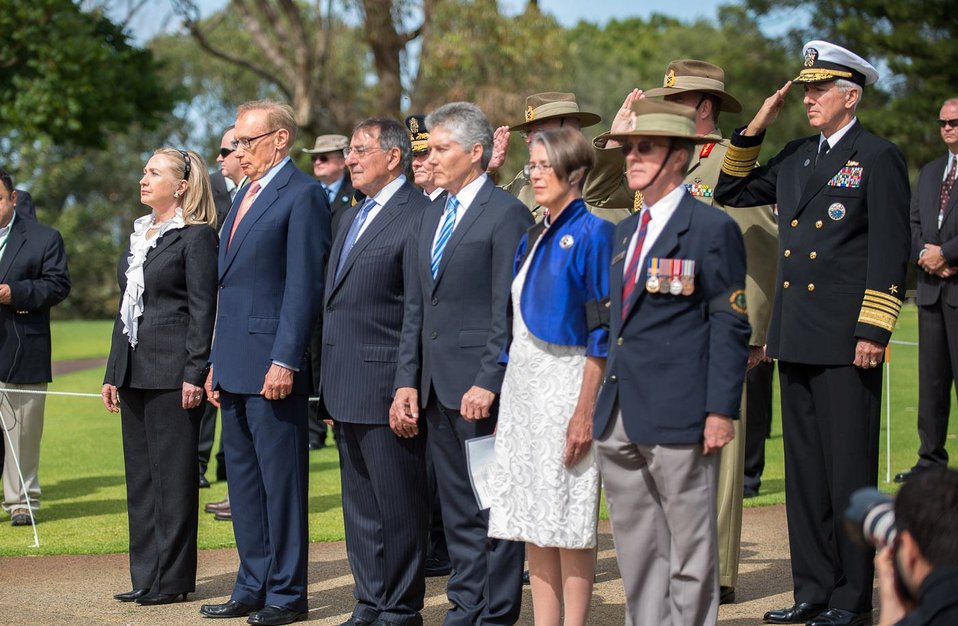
Secretary Clinton, Minister Carr, Secretary Panetta, and Minister Smith Participate in a Wreath-Laying Ceremony

From left to right, U.S. Secretary of State Hillary Rodham Clinton, Australian Foreign Minister Robert Carr, U.S. Secretary of Defense Leon Panetta, and Australian Defense Minister Stephen Smith participate in wreath-laying ceremony the State War Memorial at Kings Park and Botanic Garden in Perth, Australia, November 14, 2012. [U.S. Embassy in Canberra, Australia photo by Travis Longmore/ Public Domain]